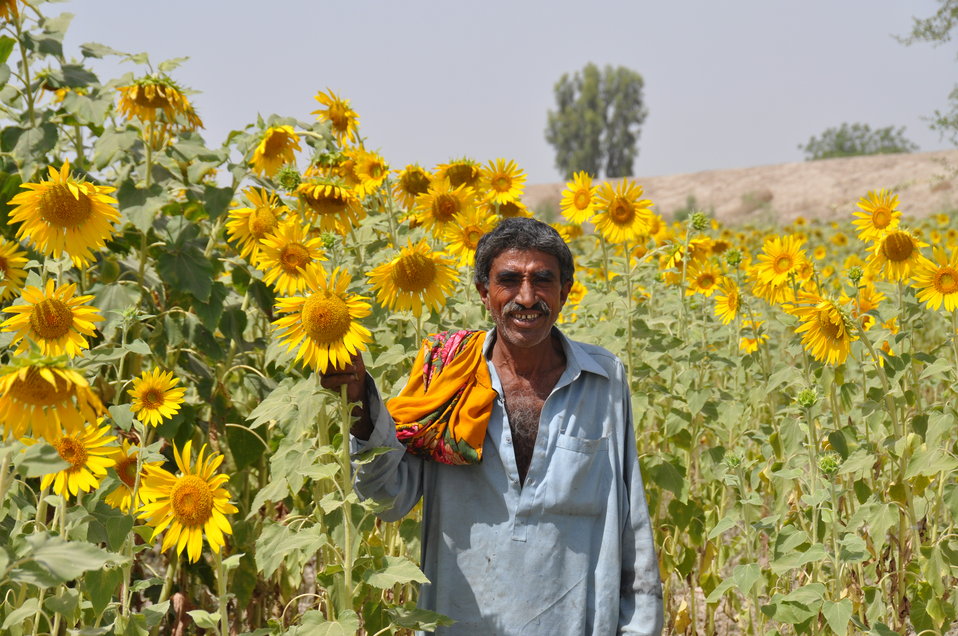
Sindh Ag